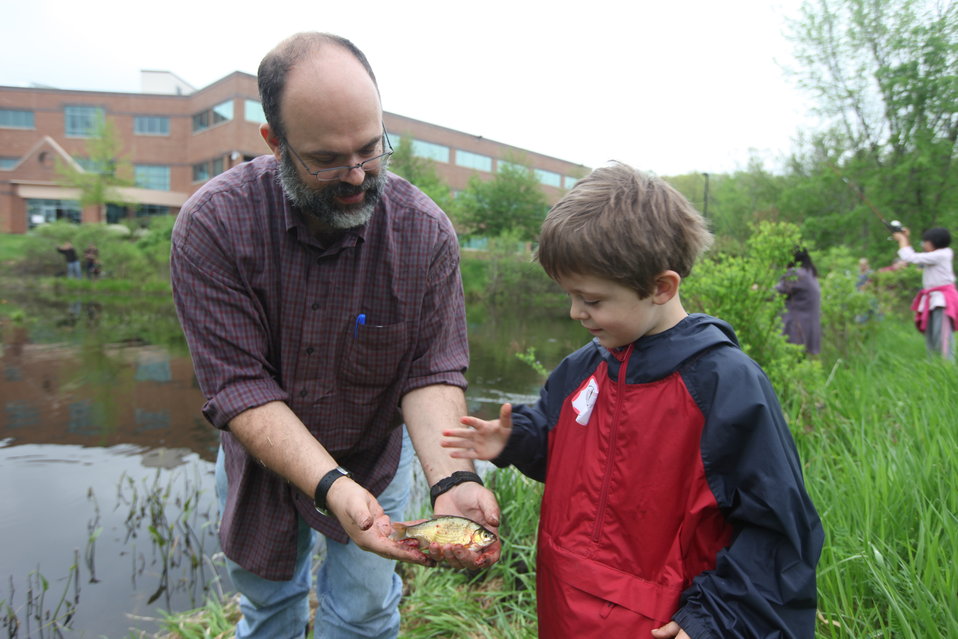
Fishing Derby